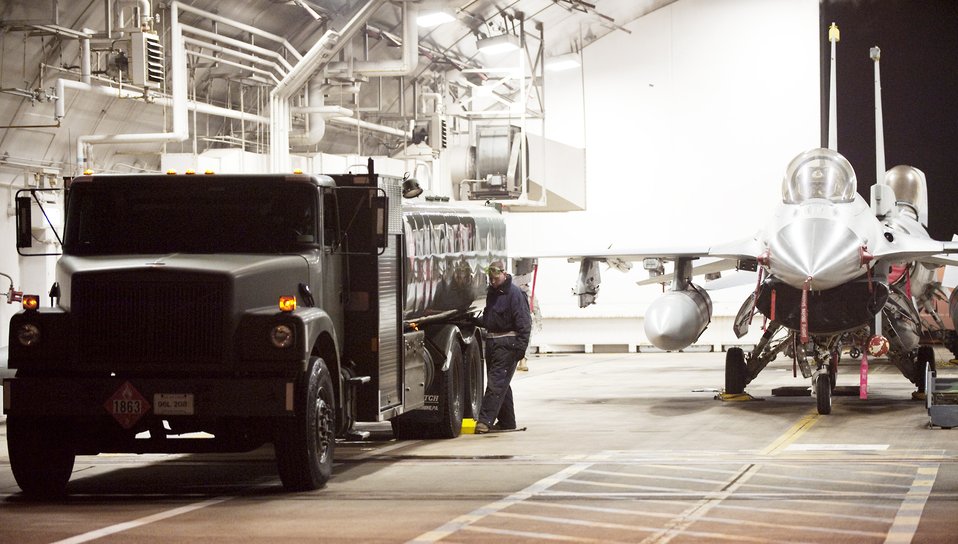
Fuels on a freezing day at Misawa

Staff Sgt. Curtis Skaggs, 14th Aircraft Maintenance Unit crew chief, places chocks behind the tires of a fuel truck in a hardened aircraft shelter Jan. 19, 2010, at Misawa Air Base, Japan. Safety of personnel and equipment is a top priority on the flightline, and the mandatory chocks help prevent vehicles from accidentally rolling.